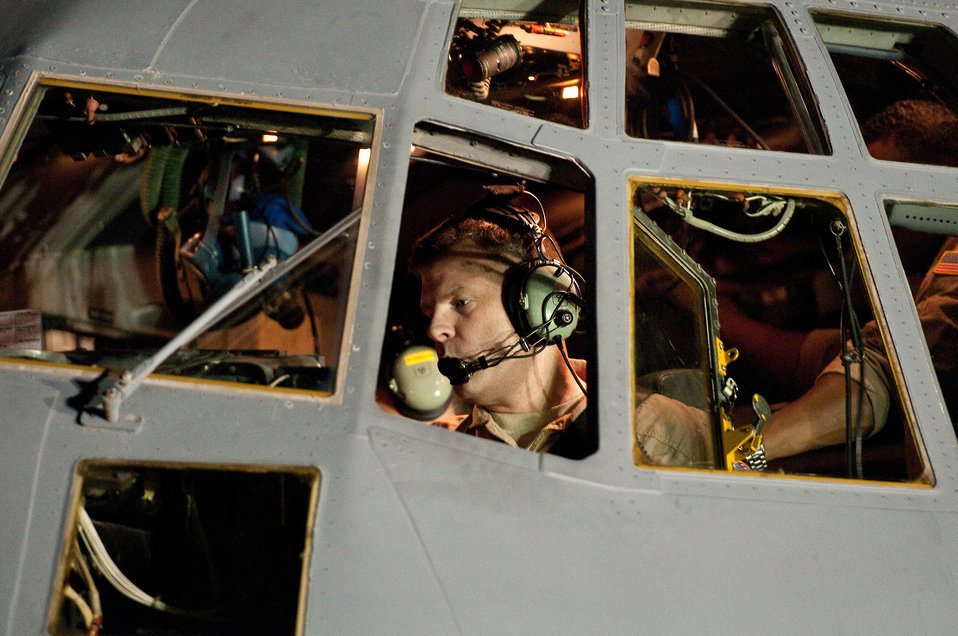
EC-130H Compass Call

Col. Scott Brewer runs through a pre-flight checklist as he prepares to pilot a U.S. Air Force EC-130H aircraft assigned to the 43rd Expeditionary Electronic Combat Squadron Aug. 29, 2010, in Southwest Asia. The plane's unit, the 43rd Expeditionary Electronic Combat Squadron, has been part of the 386th Air Expeditionary Wing for 6.5 years and is moving to another base in the U.S. Central Command area of responsibility because of the responsible drawdown of forces in Iraq. The EC-130H provides U.S. forces with the ability to jam enemy communications. Colonel Brewer is the commander of the 386th Expeditionary Operations Group.